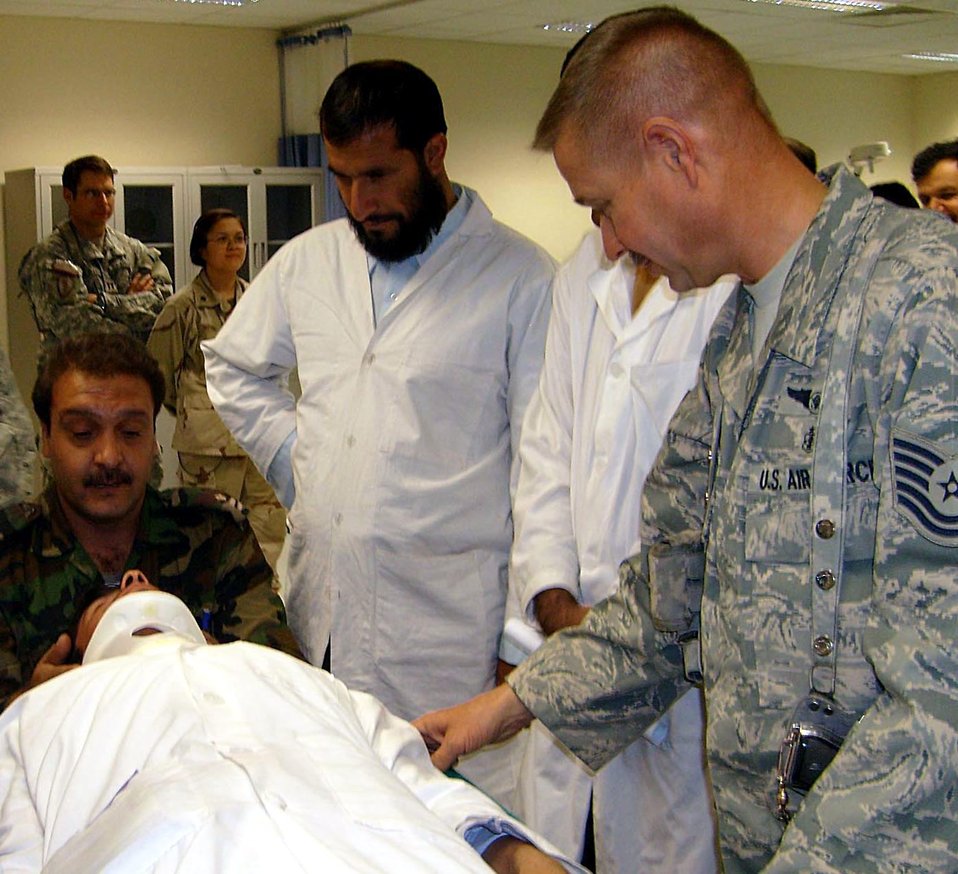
Behind the scenes, Airmen help to open hospital

Tech. Sgt. Edward Weaver instructs Afghan national army medical personnel Dec. 19 on spinal immobilization techniques at the newly-opened Kandahar ANA Regional Hospital in Afghanistan. The medical mentoring team arrived to find the construction 500 days behind schedule and immediately took on the task helping to supply and open the hospital before carrying out their mission of mentoring ANA medical personnel. Sergeant Weaver is a medic deployed from Travis Air Force Base, Calif. Thomas Seay)